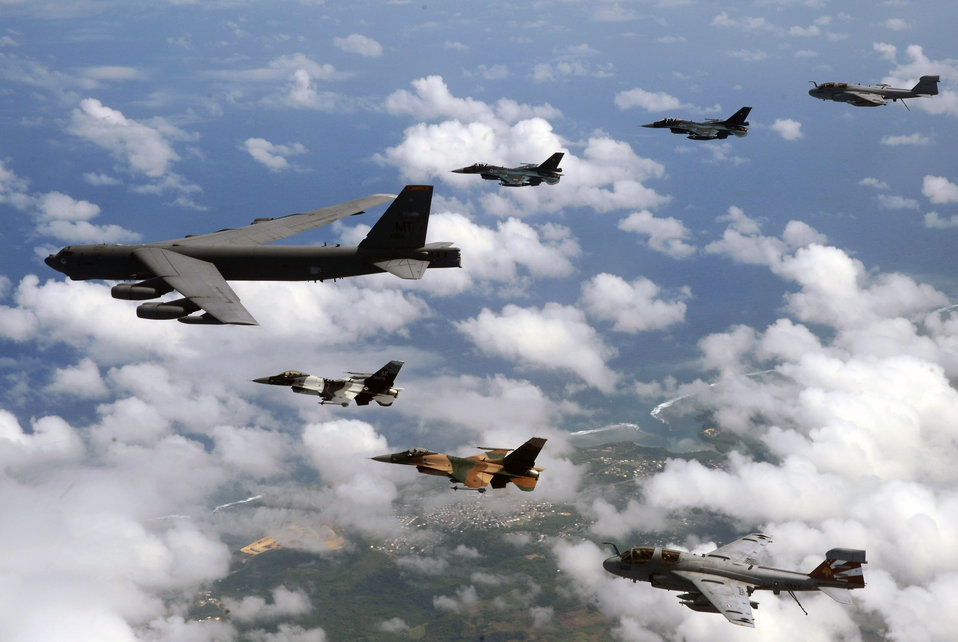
Leading a bilateral force

A B-52 Stratofortress leads a formation of Japanese Air Self Defense Force F-2s, U.S. Air Force F-16 Fighting Falcons and U.S. Navy EA-6B Prowlers over Guam Feb. 10 during Exercise Cope North at Andersen Air Force Base, Guam.